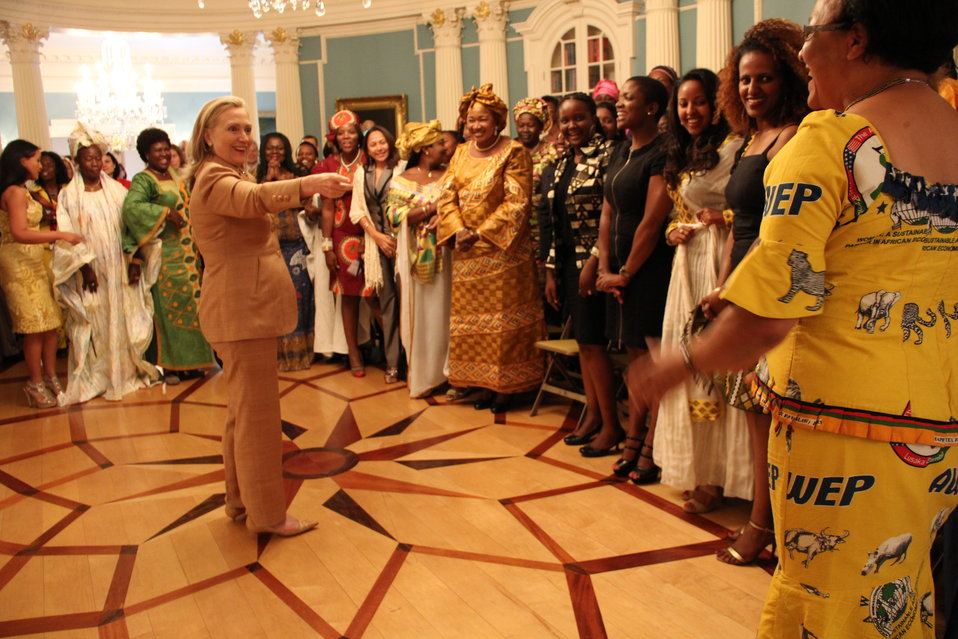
Secretary Clinton Greets African Women's Entrepreneurship Program Participants

U.S. Secretary of State Hillary Rodham Clinton greets participants in the African Women's Entrepreneurship Program at the Department of State in Washington, D.C. on June 14, 2012.